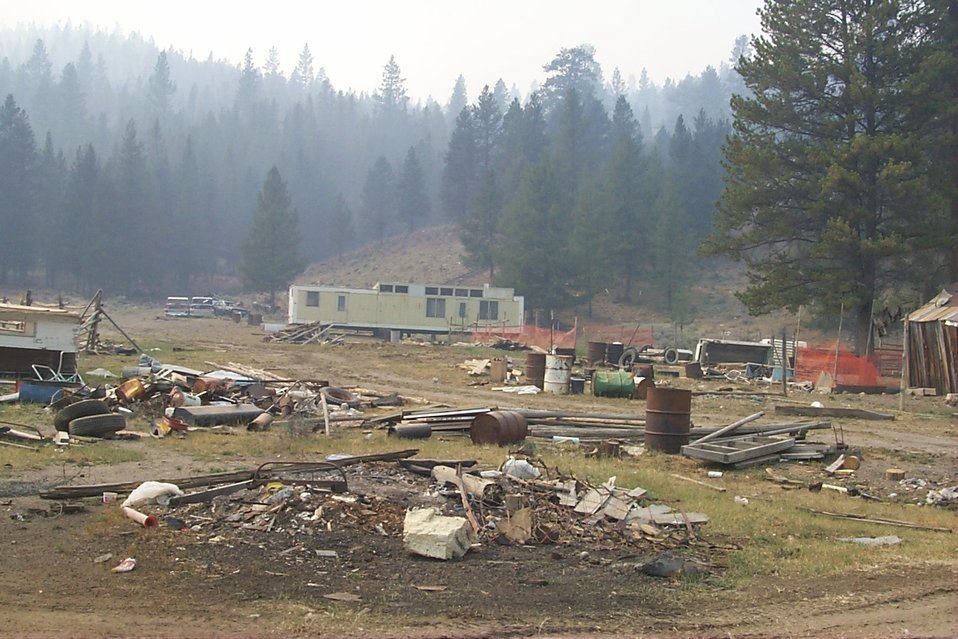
Fire Clearwater Fire Salmon Field Office USRD Upper Snake River District